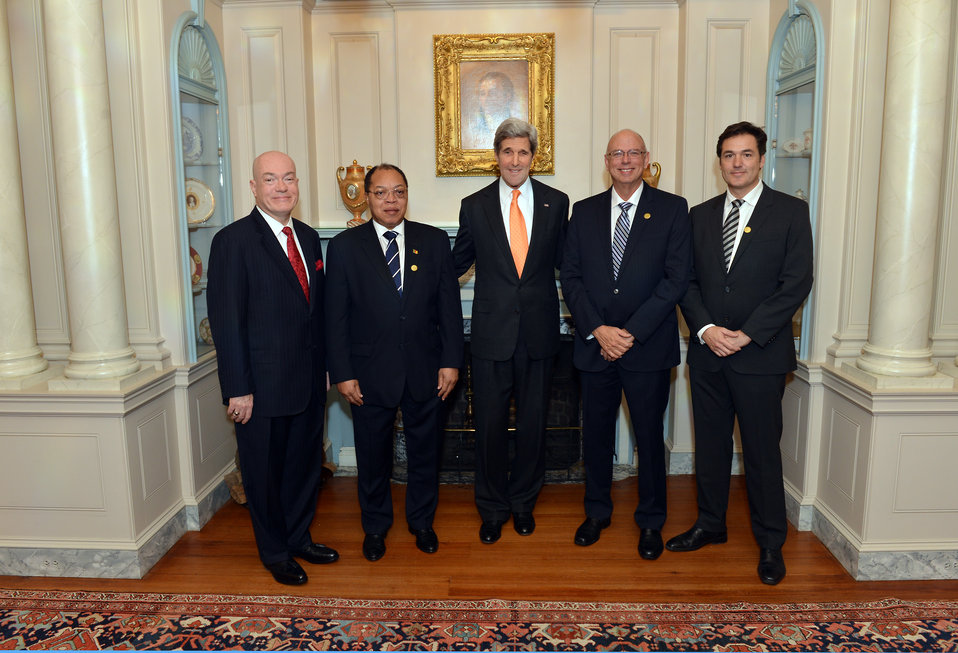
Secretary Kerry With Taylor Guitars CEO Bob Taylor and Cameroonian Ambassador Foe-Atangana

U.S. Secretary of State John Kerry poses for a photo with Bob Taylor, the CEO of Taylor Guitars in Cameroon, right of the Secretary; and Cameroonian Ambassador to the U.S. Joseph Charles Bienvenu Foe-Atangana, left of the Secretary. Taylor Guitars of Cameroon received the Secretary of State's Award for Corporate Excellence in the small business category.